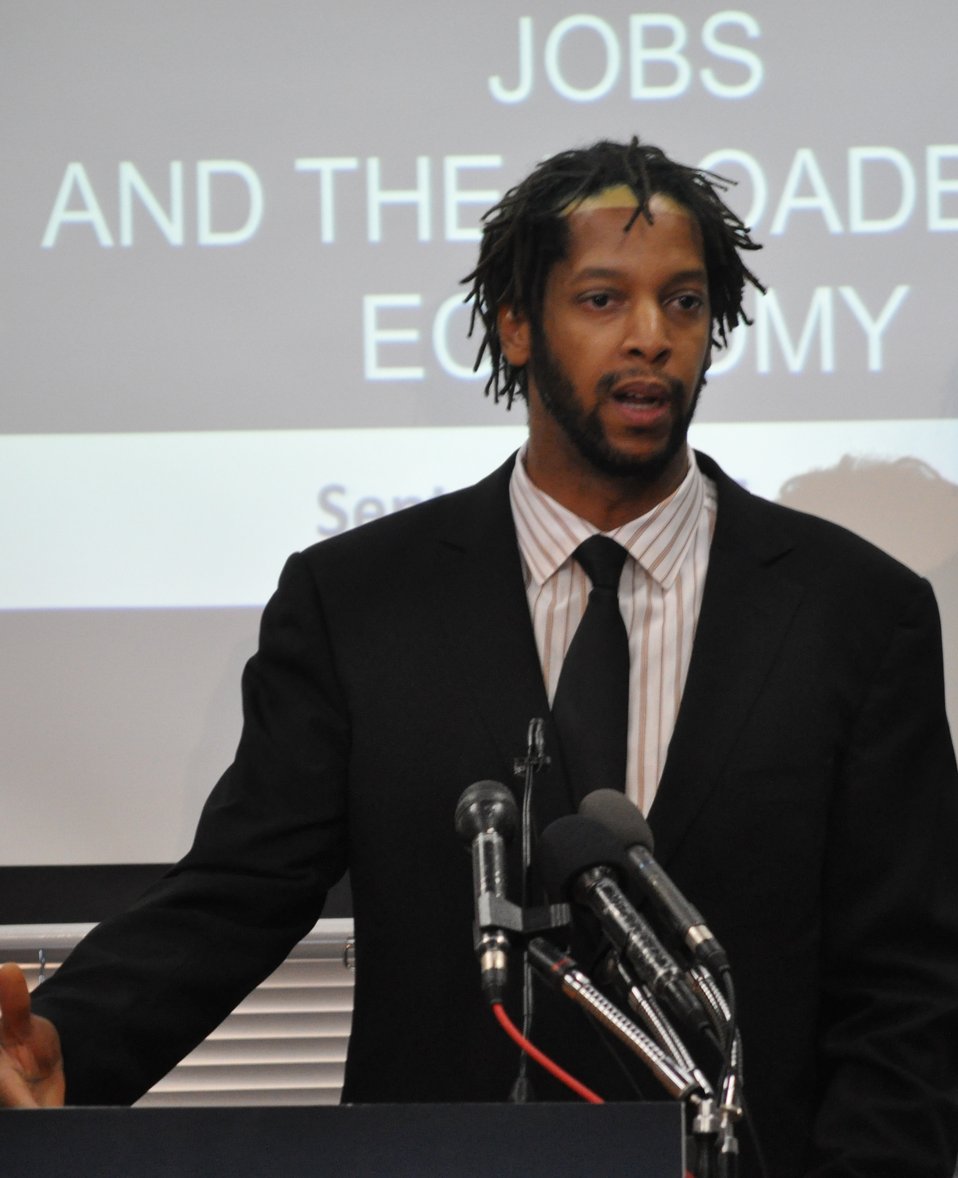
Warren Brown, Founder and Owner of CakeLove